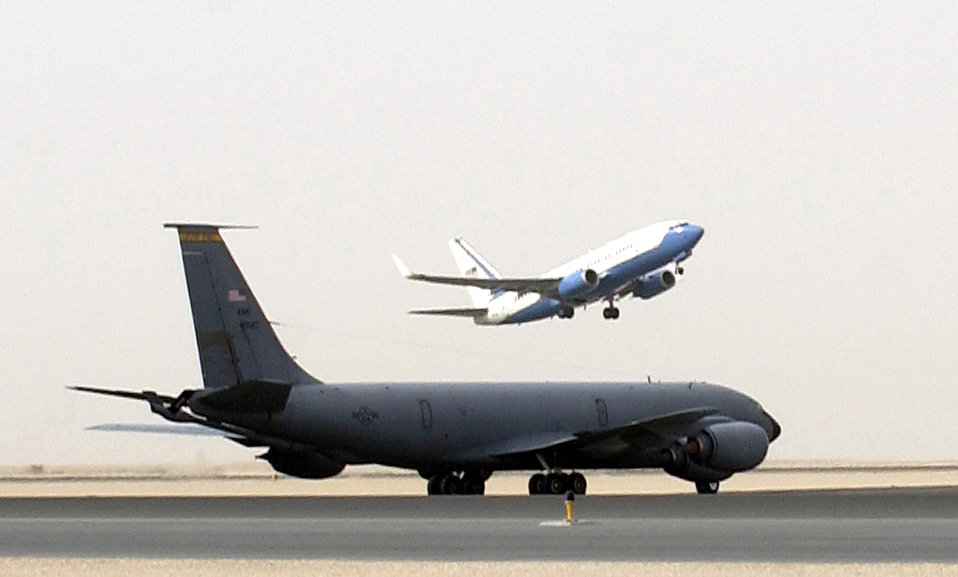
C-40B lifts off

OPERATION IRAQI FREEDOM -- A C-40B carrying General Tommy Franks, Commander, United States Central Command, takes off from a forward-deployed air base in the Middle East on April 16. General Franks is transported throughout the theatre of operations by the 1st Expeditionary Airlift Squadron out of Andrews Air Force Base, Md, deployed in support of Operation Iraqi Freedom.